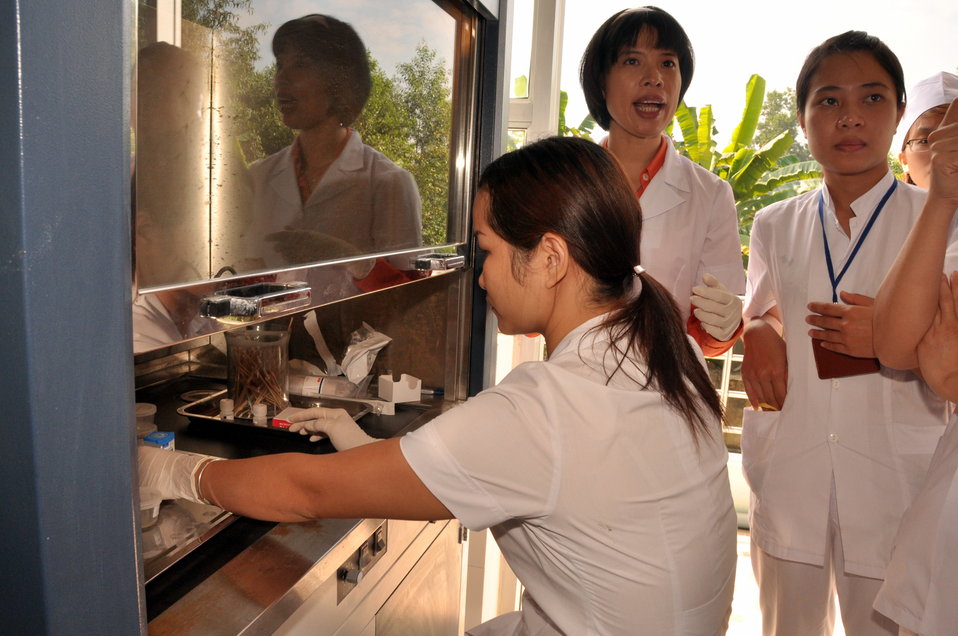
USAID supports new rapid detection TB equipment